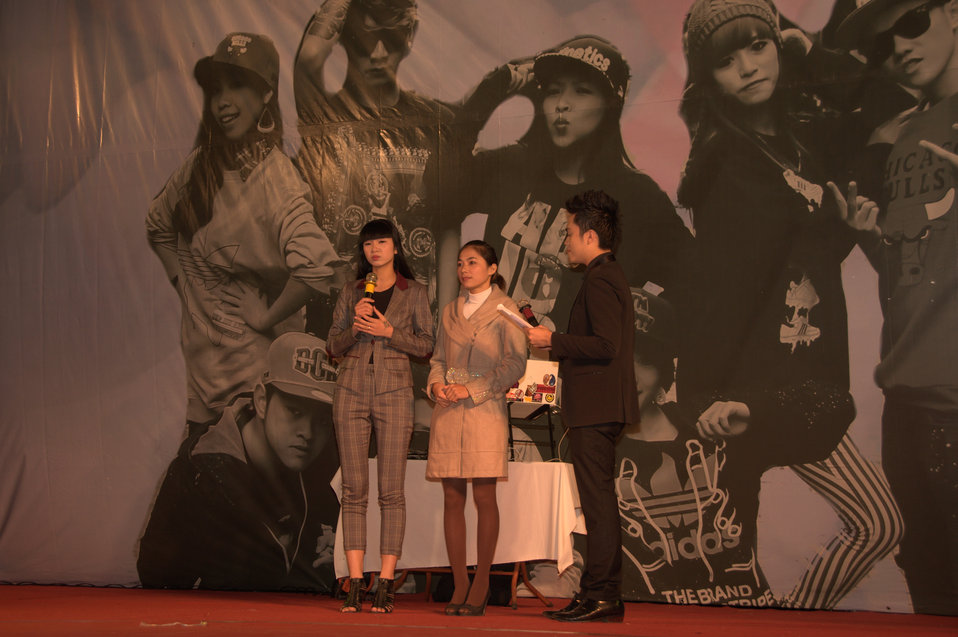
USAID and PEPFAR supports an outdoor concert to promote Vietnam's national action month for HIV

Pham Thi Hue (middle), who was named as one of “Asia’s Heroes” by Time Magazine in 2004 in recognition of her work to combat stigma and discrimination HIV/AIDS, speaks at the concert.

Hanoi, December 18, 2012.